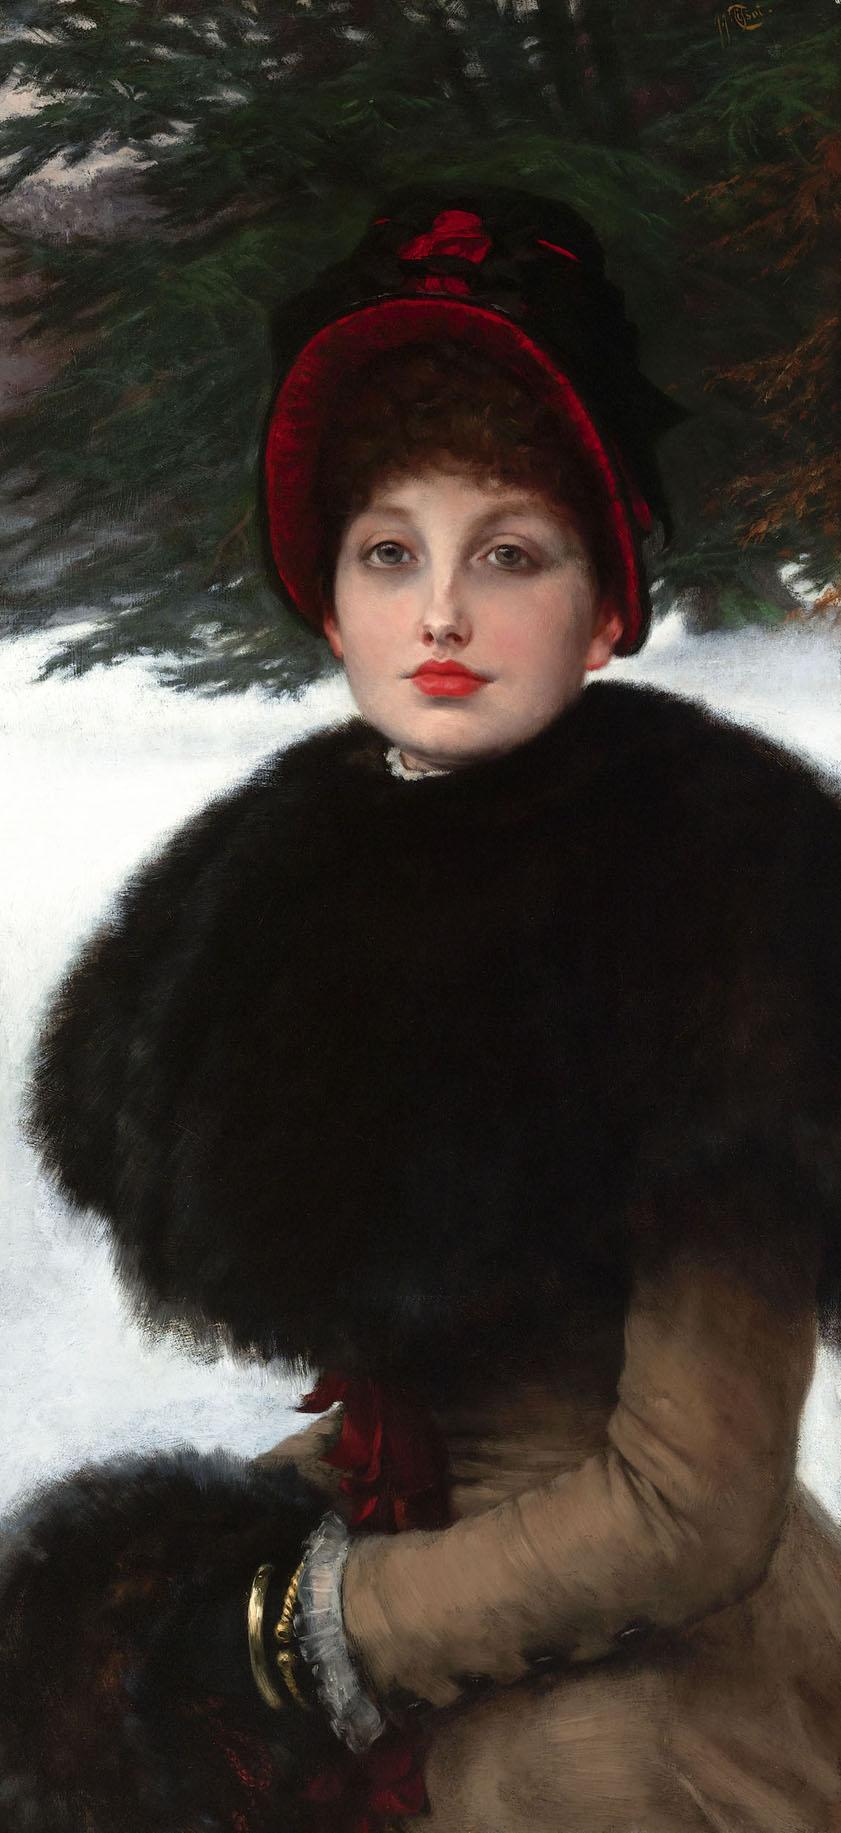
A Winter’s Walk (Promenade dans la neige) by James-Jacques-Joseph Tissot